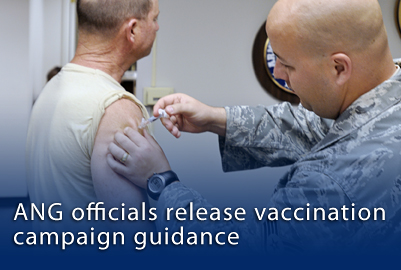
Army, Air Guard officials prepare for flu season